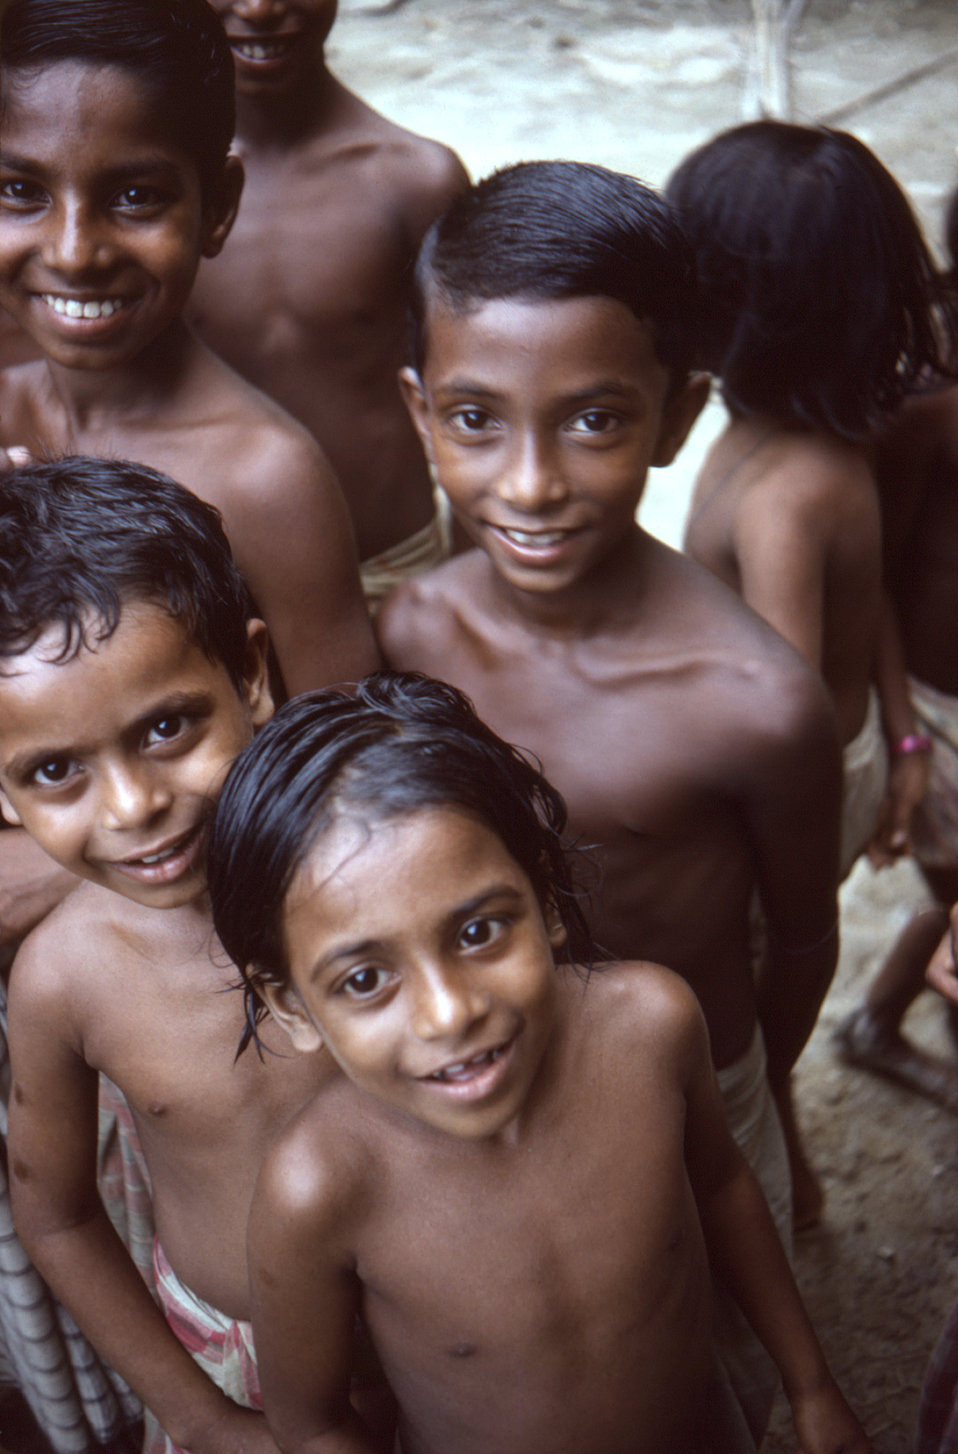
This photograph depicted a group of children who were living in the Sylet District of north-eastern Bangladesh, during a national smallpox search in September, 1975.